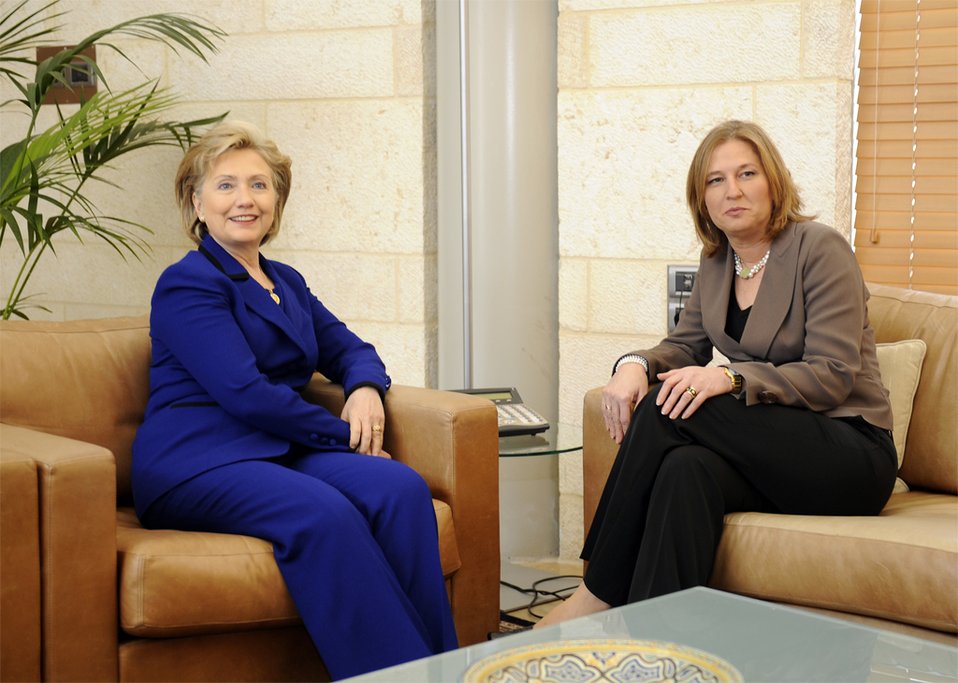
Secretary Clinton With Israeli Foreign Minister

U.S. Secretary of State Hillary Rodham Clinton at the Foreign Ministry Press Conference following meeting with Foreign Minister Tzippi Livni in Jerusalem March 3, 2009